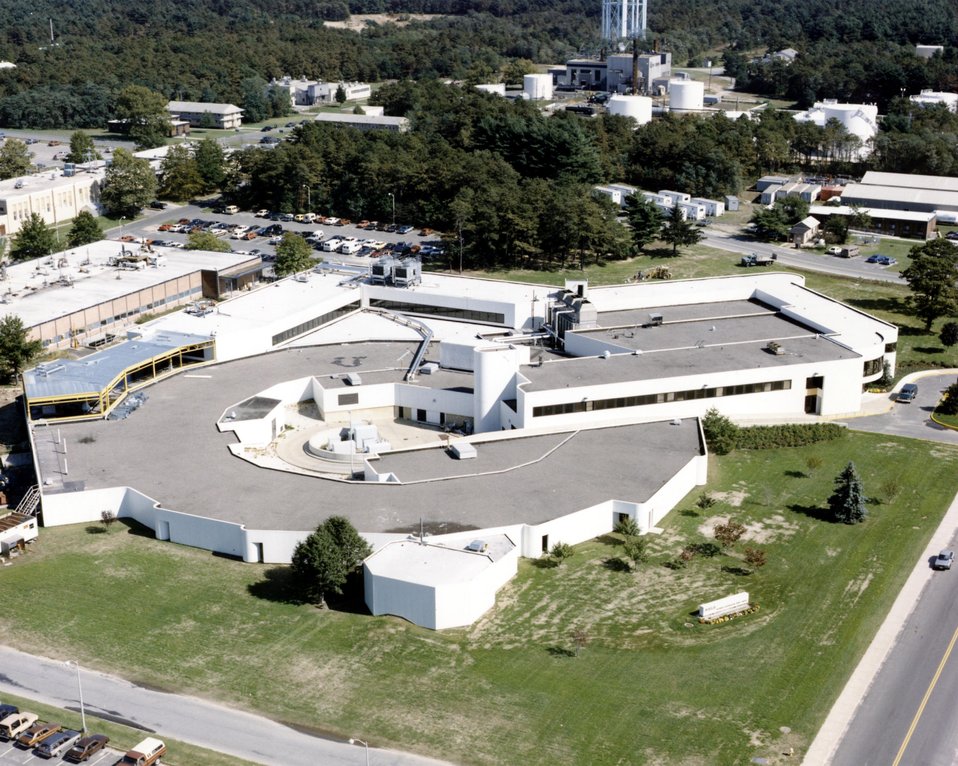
VIEW OF THE NATIONAL SYNCHROTRON LIGHT SOURCE.

THE NATIONAL SYNCHROTRON LIGHT SOURCE IS THE NATION'S LARGEST FACILITY DEDICATED SOLELY TO THE PRODUCTION OF SYNCHROTRON RADIATION. IT PROVIDES INTENSE BEAMS OF X-RAYS AND ULTRAVIOLET LIGHT FOR USE BY SCIENTISTS FROM ALL OVER THE COUNTRY, FOR RESEARCH IN PHYSICS, CHEMISTRY, BIOLOGY AND VARIOUS TECHNOLOGIES. WORK AT THE NSLS INCLUDES BOTH BASIC RESEARCH AND PRACTICAL APPLICATIONS OF USE TO INDUSTRY, USERS OF THE NEW FACILITY INCLUDE VISITING SCIENTISTS FROM UNIVERSITIES, OTHER NATIONAL LABORATORIES, AND CORPORATIONS.